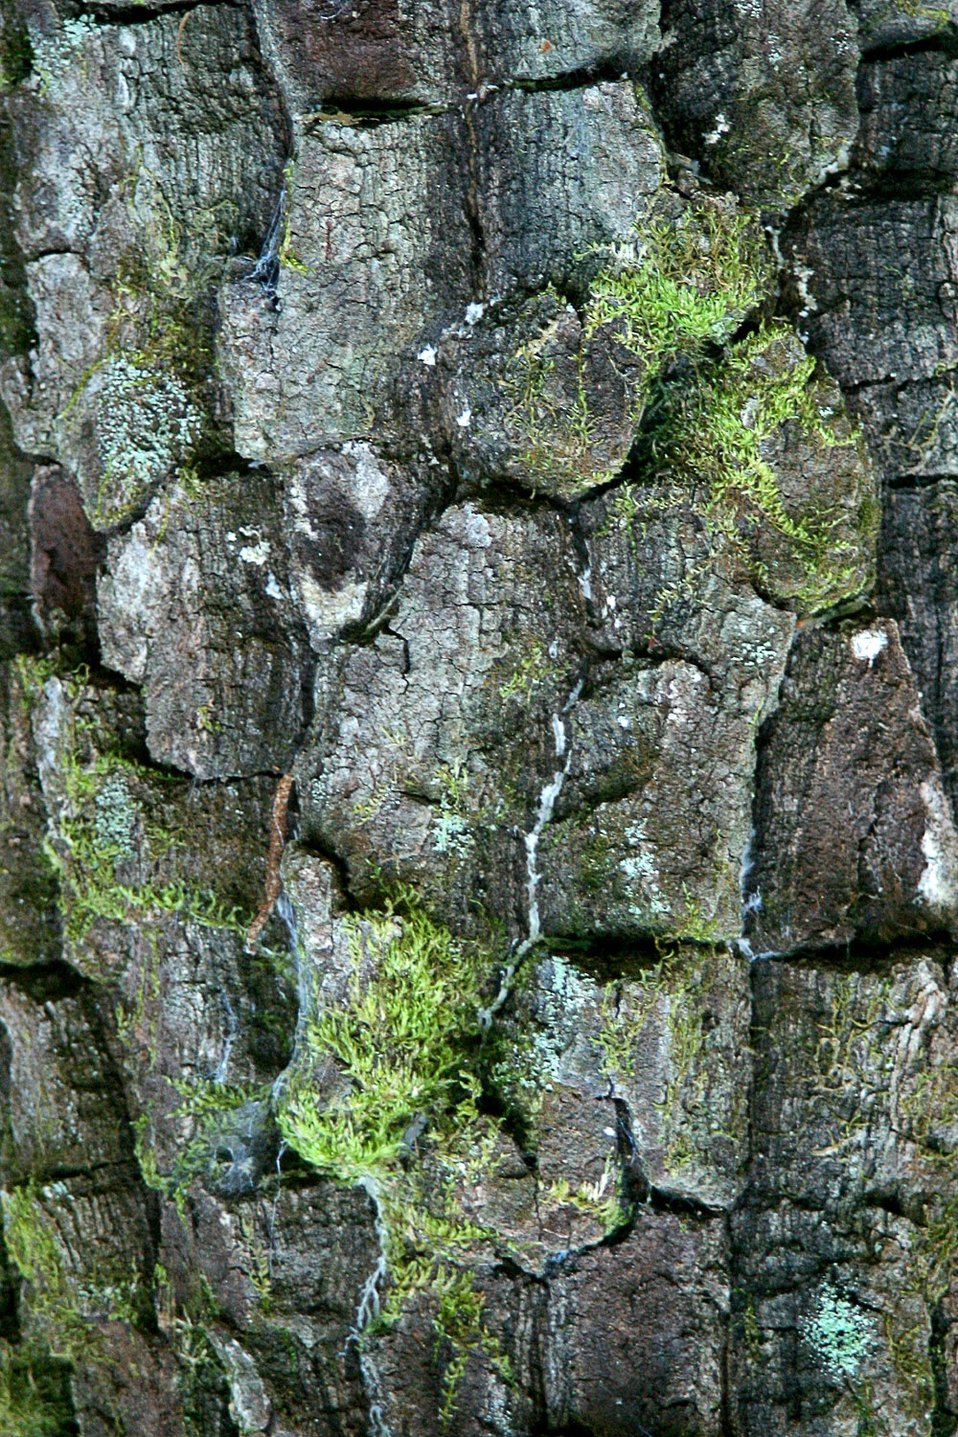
Wild section of the Rogue River from Grave Creek to Foster Bar May 19 to May 22. A type of Oak tree? bark on the trail to the Whisky Creek Cabin.